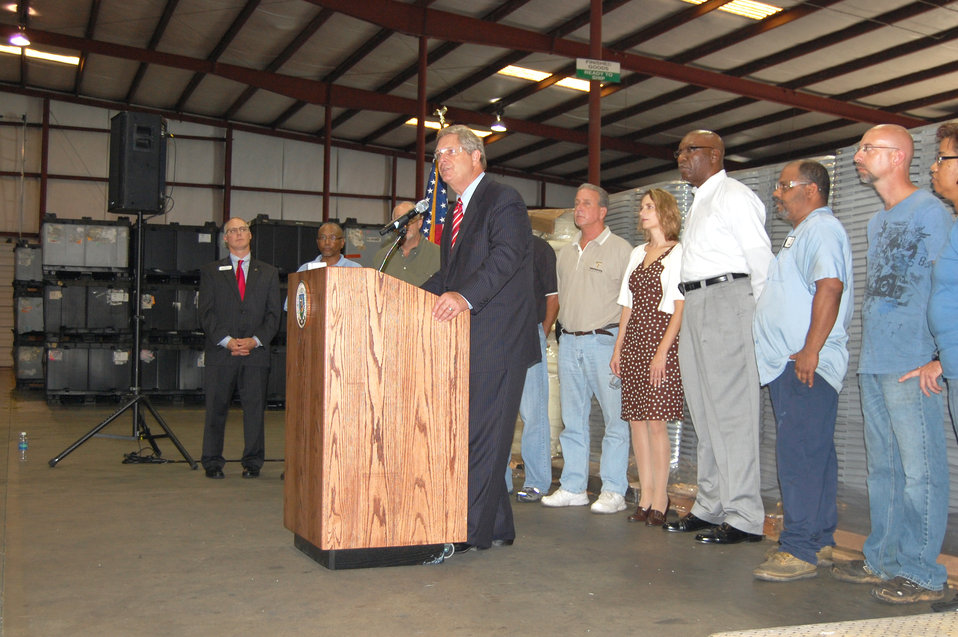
Agriculture Secretary Tom Vilsack with Tarheel Plastics staff addresses the media at the Tarheel Plastics Plant in Lexington, NC., on Friday, Sept. 7, 2012. Tarheel Plastics produces components for automobiles and a wide variety of household appliances, supplying parts to companies such as Frigidaire and Electrolux. The company is certified as a minority business enterprise (51 percent minority owned) and recently received a U.S. Department of Agriculture (USDA) Rural Development (RD) business loan guarantee that allowed them to refinance.